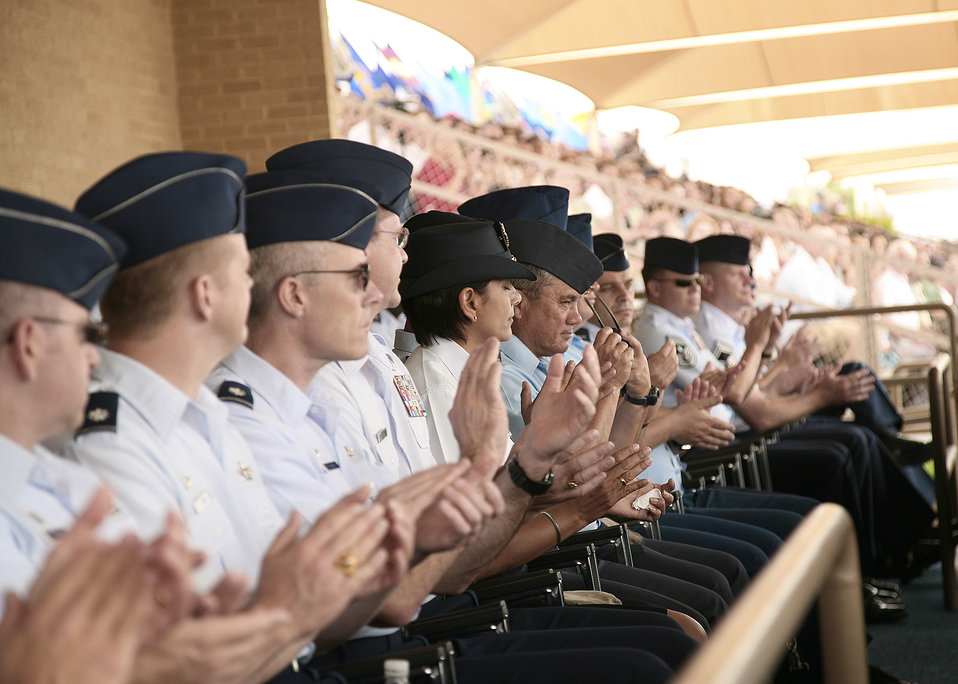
Senior enlisted leaders strengthen international bonds

Attendees from the Senior Enlisted Leader Summit view the Air Force Basic Military Training graduation parade May 15 at Lackland Air Force Base, Texas.